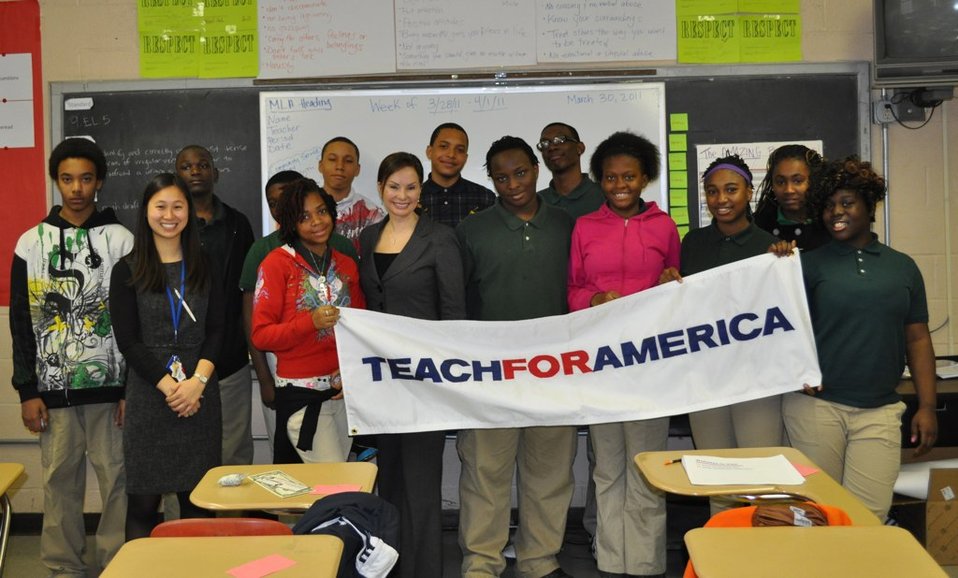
Treasurer Rios Guest Teaching Personal Finance

As part of Teach for America Week, Treasurer Rosie Rios was a guest teacher at Springarn Senior High School in Washington, D.C.